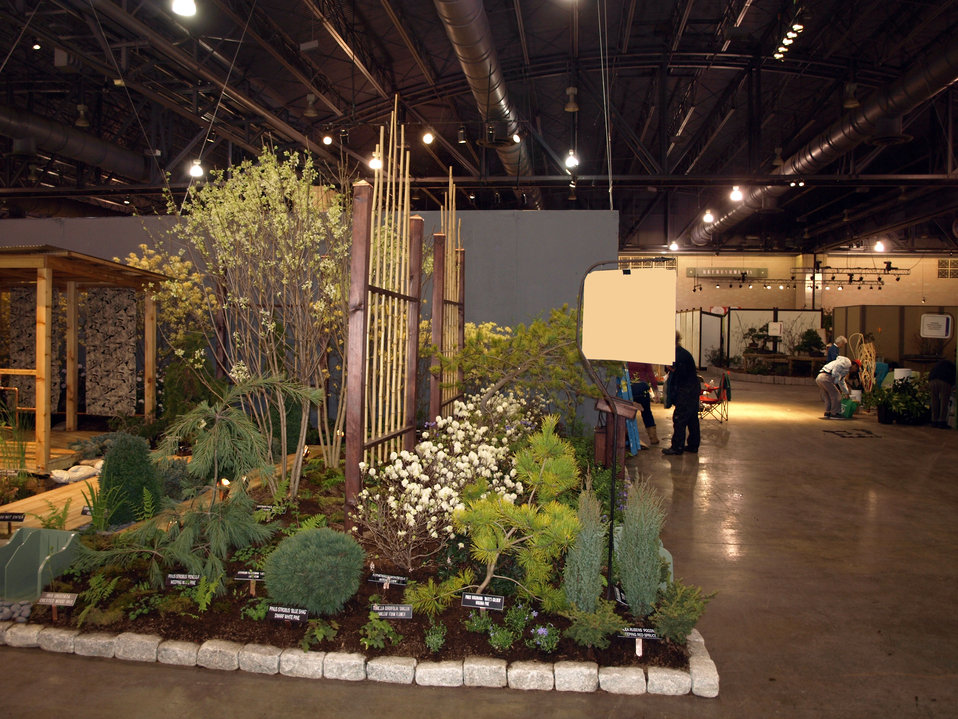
EPA’s 2010 Philadelphia Flower Show Exhibit – right side

The 2010 exhibit viewed from the right side

Learn more about EPA’s Exhibit at the 2010 Philadelphia International Flower Show:
www.epa.gov/reg3esd1/garden/flower show.htm
www.epa.gov/reg3esd1/garden/flower show plants.htm
www.epa.gov/reg3esd1/garden/pdf/flowershow2010.pdf (6 pp, 864K)